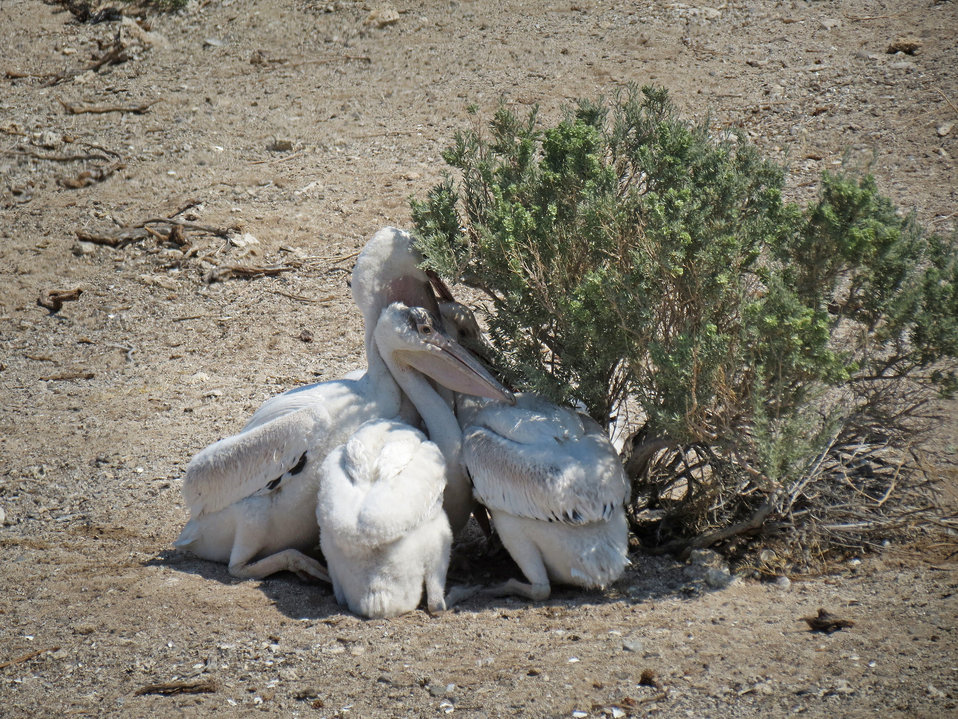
Anaho Island NWR juvenile American white pelicans